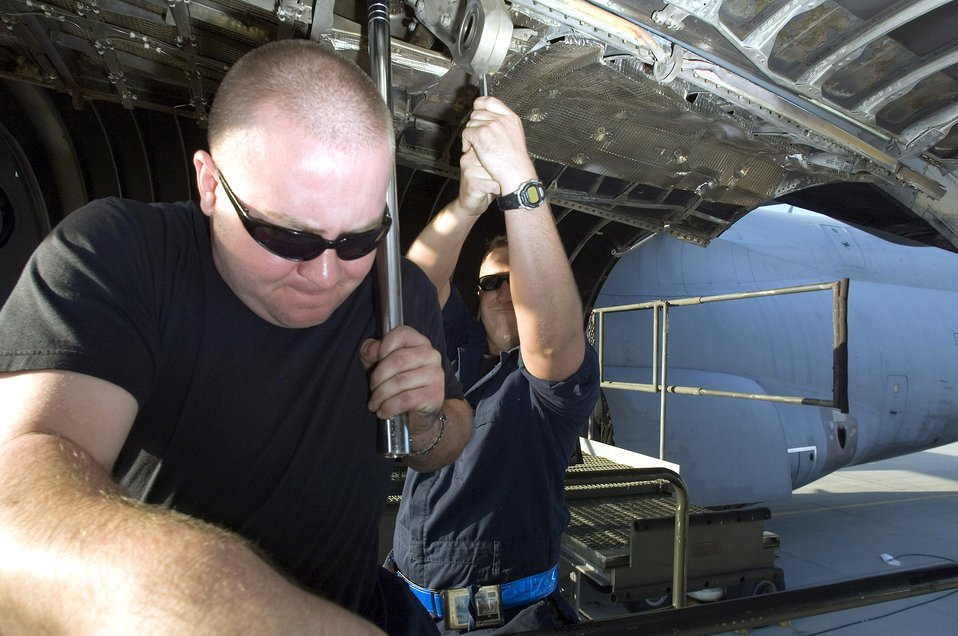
Maintainers keep C-5s flying

Staff Sgts. Steve Fields (left) and Matthew Lockwood exchange engine anchors on a C-5 Galaxy while replacing a damaged engine on May 11, 2006 at Ramstein Air Base, Germany. Sergeant Fields, from Stockton, Calif., is a jet engine mechanic and Sergeant Lockwood, from Redding, Calif., is a crew chief. Both are assigned to the 723rd Air Mobility Squadron.